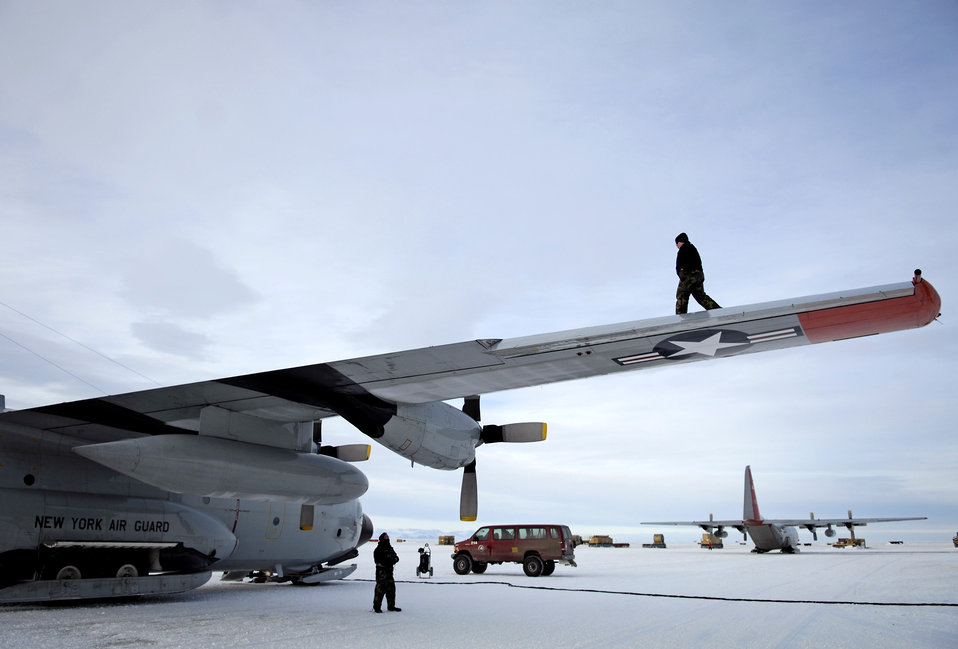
ODF retreat

In this file photo, a maintenance crew conducts a post-flight check of an LC-130 Hercules on the ice runway near McMurdo Station, Antarctica, during Operation Deep Freeze. Ski-equipped LC-130s, crews and support personnel from the New York Air National Guard's 109th Airlift Wing support the 13th Air Force-led Joint Task Force Support Forces Antarctica.